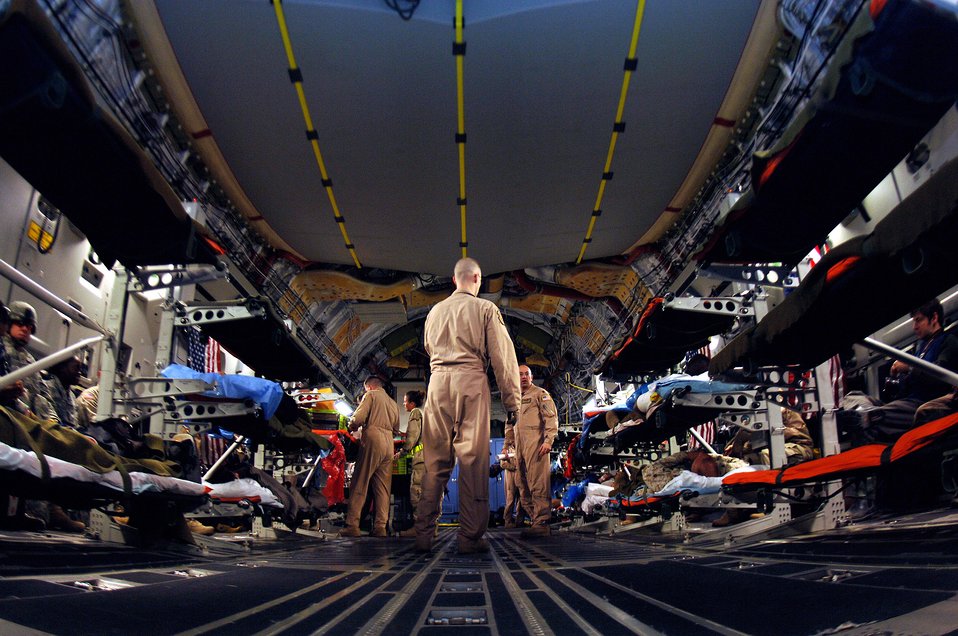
Aeromedical evacuation crewmembers prepare to take off Monday, March 20, 2006 with 16 patients aboard a C-17 Globemaster III. The patients were stabilized at the Air Force Theater Hospital in Iraq.